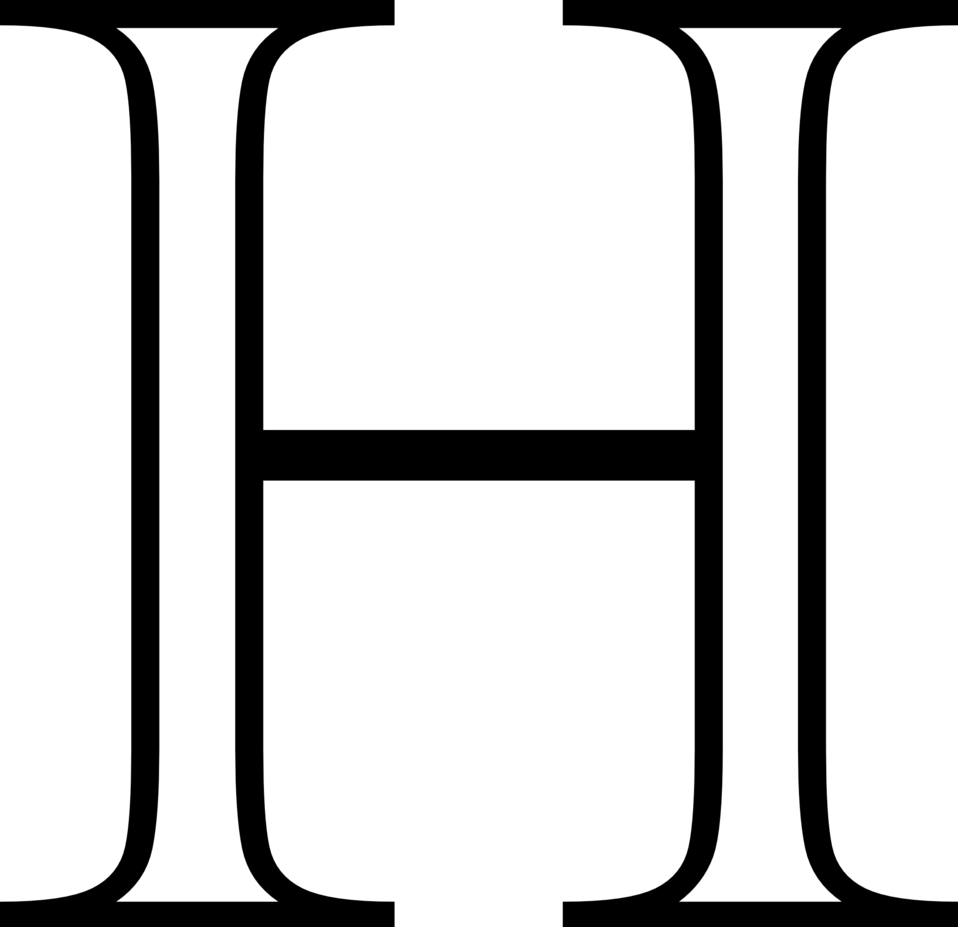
Unicode Character from the Letterlike Symbols (2100–214F) block.